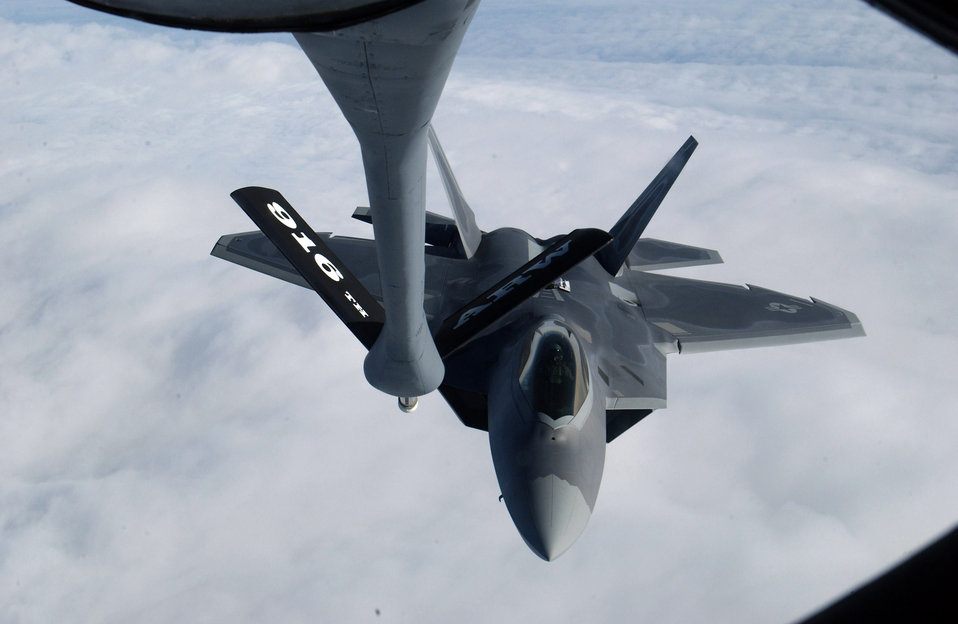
Operation Noble Eagle

LANGLEY AIR FORCE BASE, Va. (AFPN) -- An F-22A Raptor refuels from a KC-135R Stratotanker Jan. 21. This refueling was part of the Raptor's first operational mission. The KC-135 is with the 916th Air Refueling Wing.